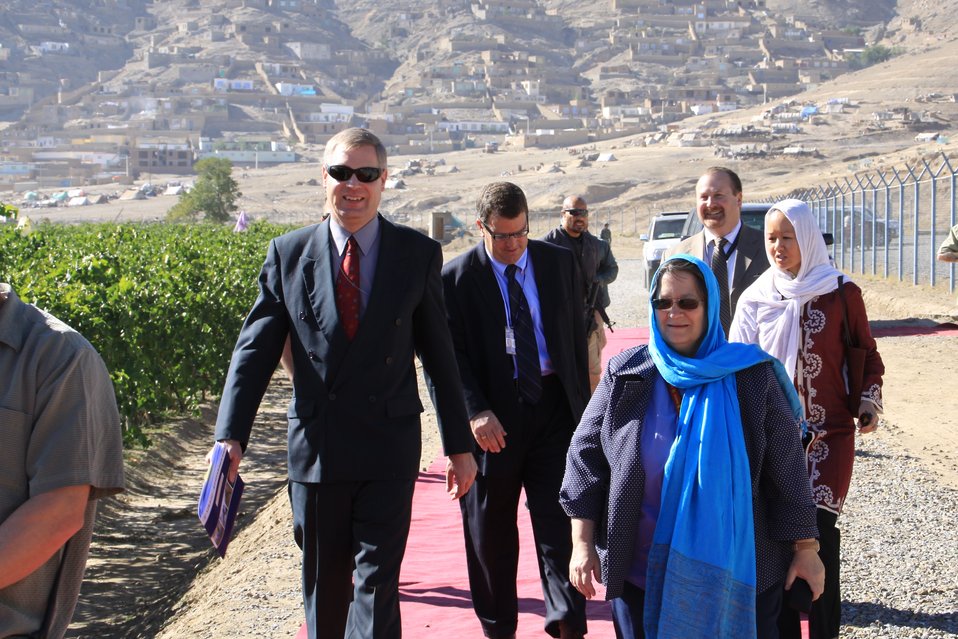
AVIPA Plus Wheat Seed Distribution 101005